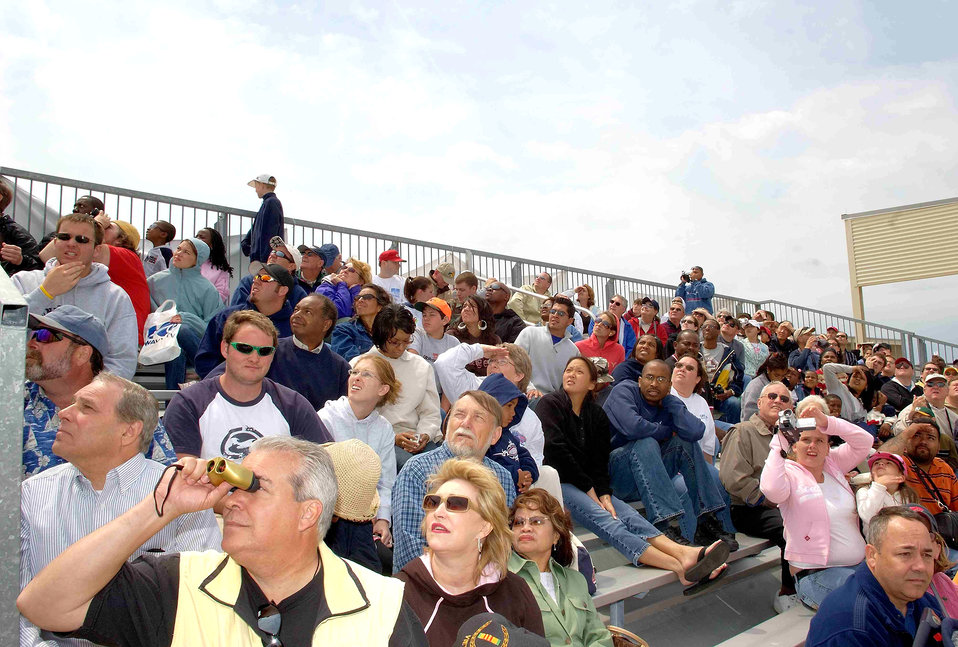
Air Power Over Hampton Roads Air Show 2006

Thousands of military and civilian aircraft enthusiasts marvel at the aerial feats at the Air Power over Hampton Roads Air Show at Langley Air Force Base, Va., on Sunday, May 7, 2006.